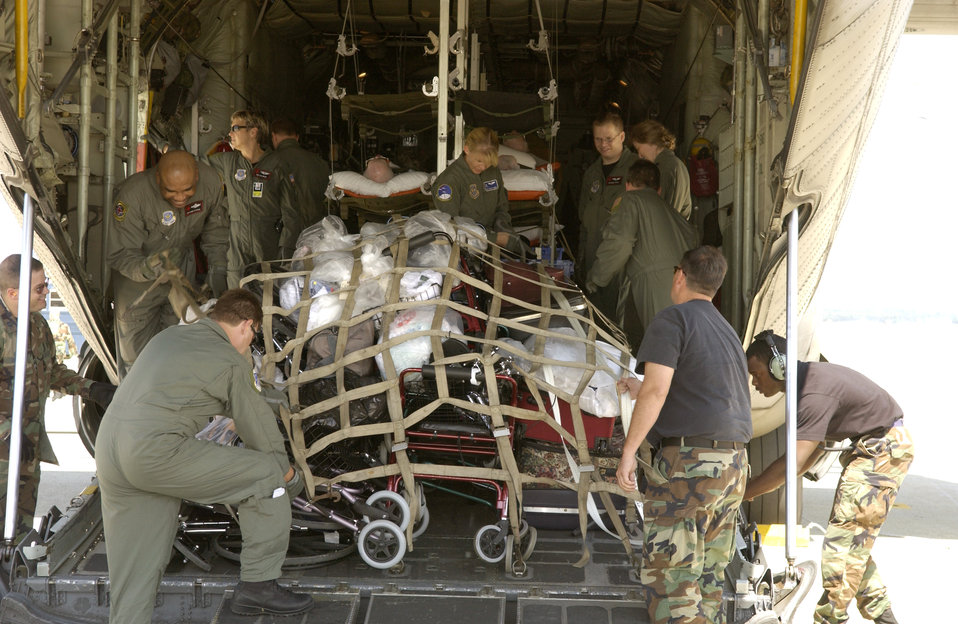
Cargo hauler

ANDREWS AIR FORCE BASE, Md. -- Airmen with the 908th Airlift Wing at Maxwell Air Force Base, Ala., the 375th Aeromedical Evacuation Squadron at Scott AFB, Ill., and the 89th Medical Group here strap down cargo while transporting veterans from the Armed Forces Home in Gulfport, Miss., after Hurricane Katrina decimated the area. The veterans were flown by a C-130 Hercules from Maxwell to here where they were then taken to the Armed Forces Home in Washington, D.C.